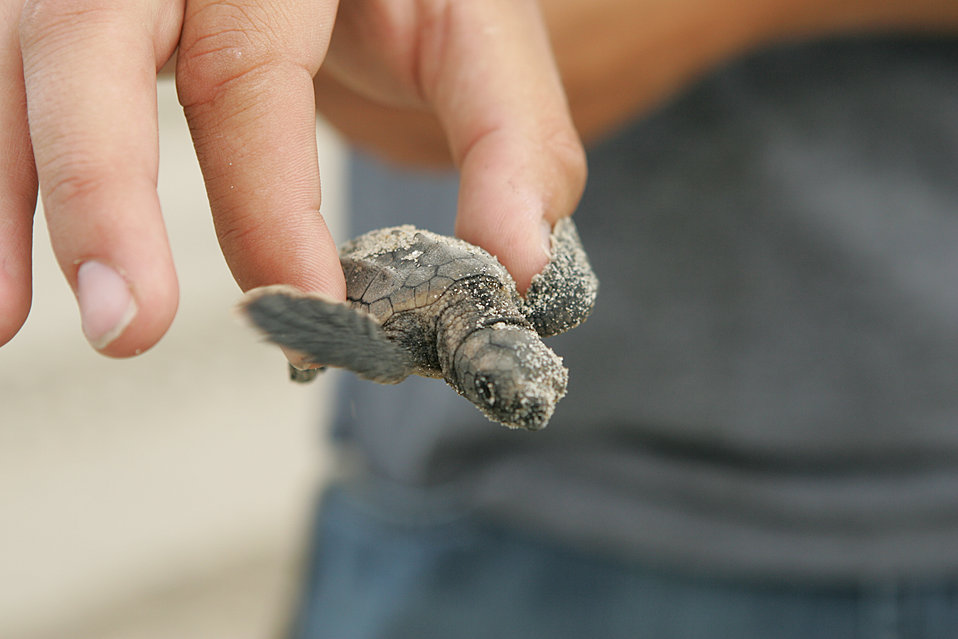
Baby loggerhead turtle

Volunteer helps inventory a nest of hatched turtles in order to determine productivity. This hatchling was found in the nest - it did not get out on its own. It was taken to the water due to the heat of the day and to protect it from being spotted and eaten by sea gulls.